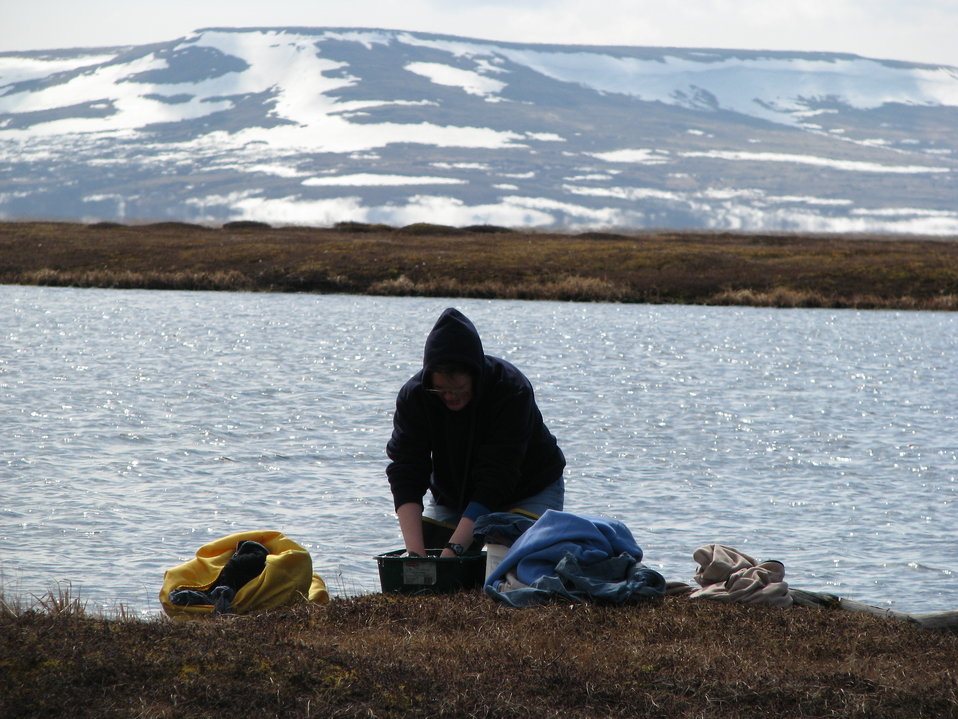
Laundry day

No washing machines and driers out here! If you want to do your laundry it has to be done by hand.

USFWS Yukon Delta NWR